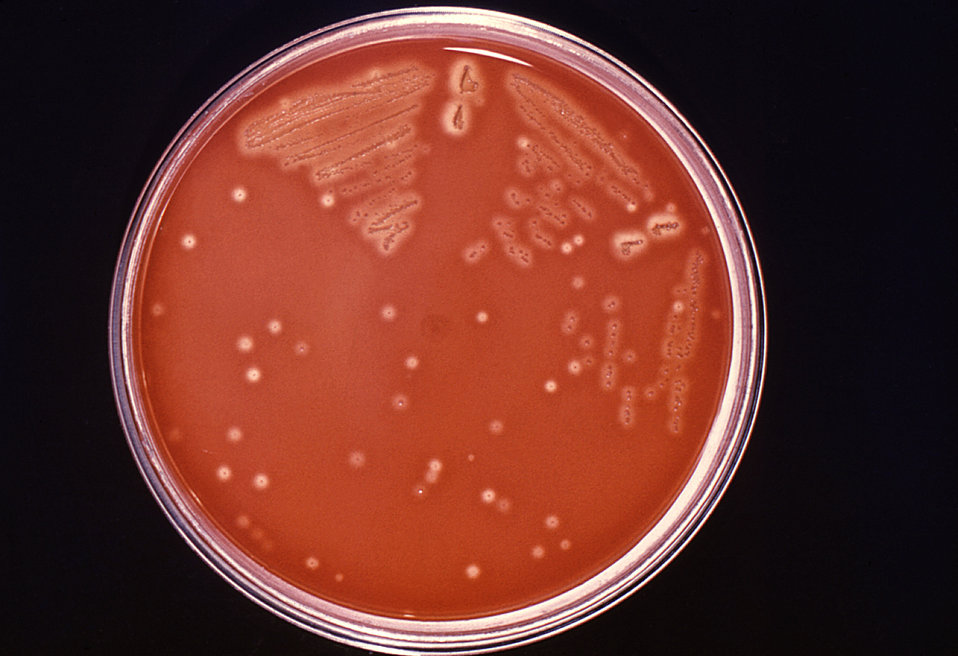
This 1977 photograph depicted a Petri dish with Streptococcus pyogenes-inoculated trypticase soy agar containing 5% defibrinated sheep's blood, i.e., blood agar plate (BAP), that had been "streaked", and "stabbed" with a wire loop, which had been dipped into primary culture medium. The BAP was incubated in a normal atmosphere at 35oC for 24 hours. In this case, the culture dish grew colonies of Gram-positive Group A beta-Streptococci (GAS) bacteria. The characteristic color changes, i.e., a clear, colorless region surrounding each colony in which the red blood cells in the blood agar medium had been destroyed, or "hemolyzed", indicated that these bacteria were indeed beta-hemolytic in nature. There is no magnification of this image.Infection with GAS can result in a range of symptoms:- No illness- Mild illness (strep throat or a skin infection such as impetigo)- Severe illness (necrotizing faciitis, streptococcal toxic shock syndrome)